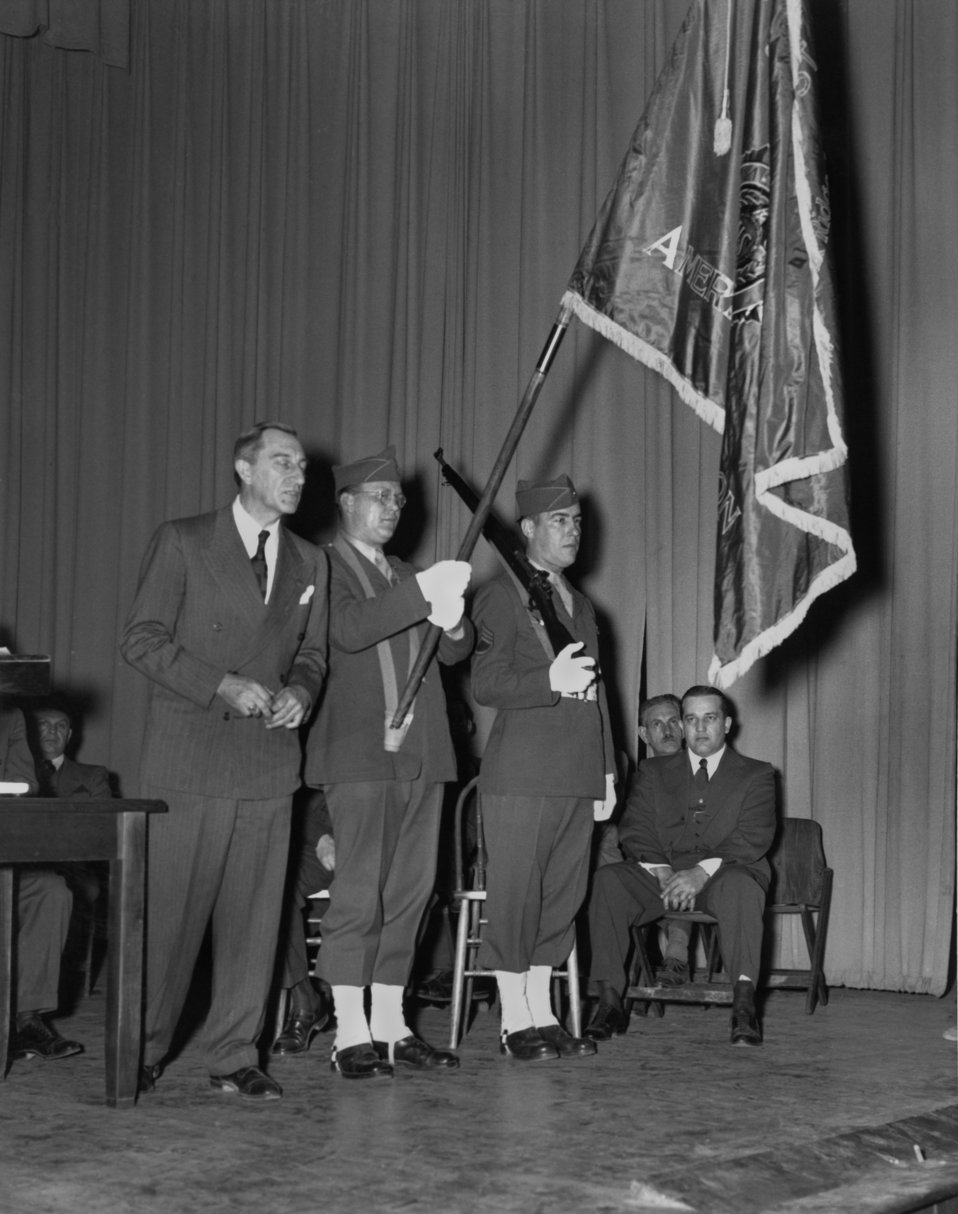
American Legion Color Presentation 1945 Oak Ridge

pro276-3 DOE photo Ed Westcott 1-28-1945 Oak Ridge Tennessee